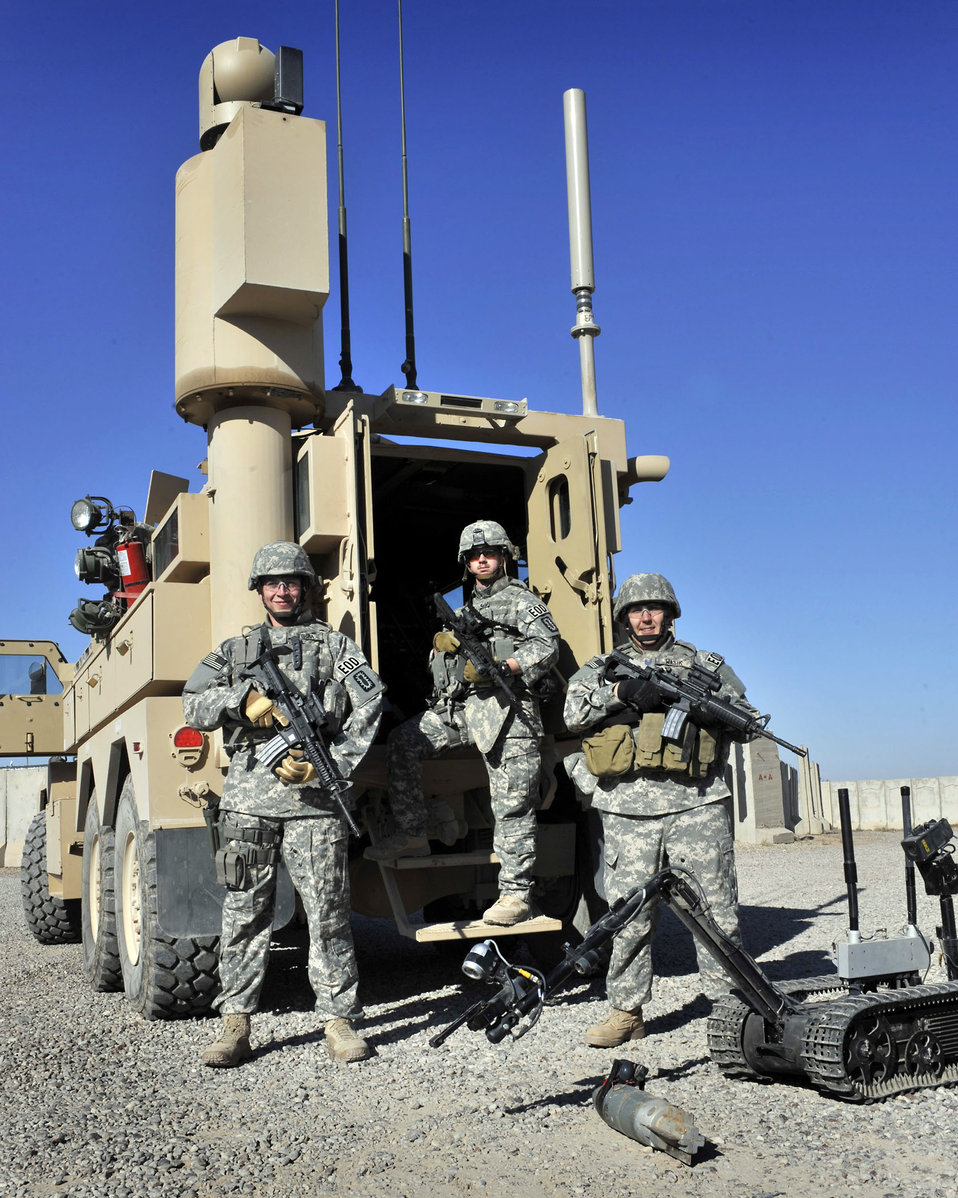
Sather Airmen destroy weapons cache

Airman 1st Class Derrick Torba, Staff Sgt. Michael Breive and Tech. Sgt. Jeffrey Wasik stand ready in front of a joint explosive ordnance disposal rapid response vehicle Dec. 17 at Sather Air Base, Iraq. All three are EOD technicians assigned to the 447th Expeditionary Civil Engineer Squadron Explosive Ordnance Disposal Flight.